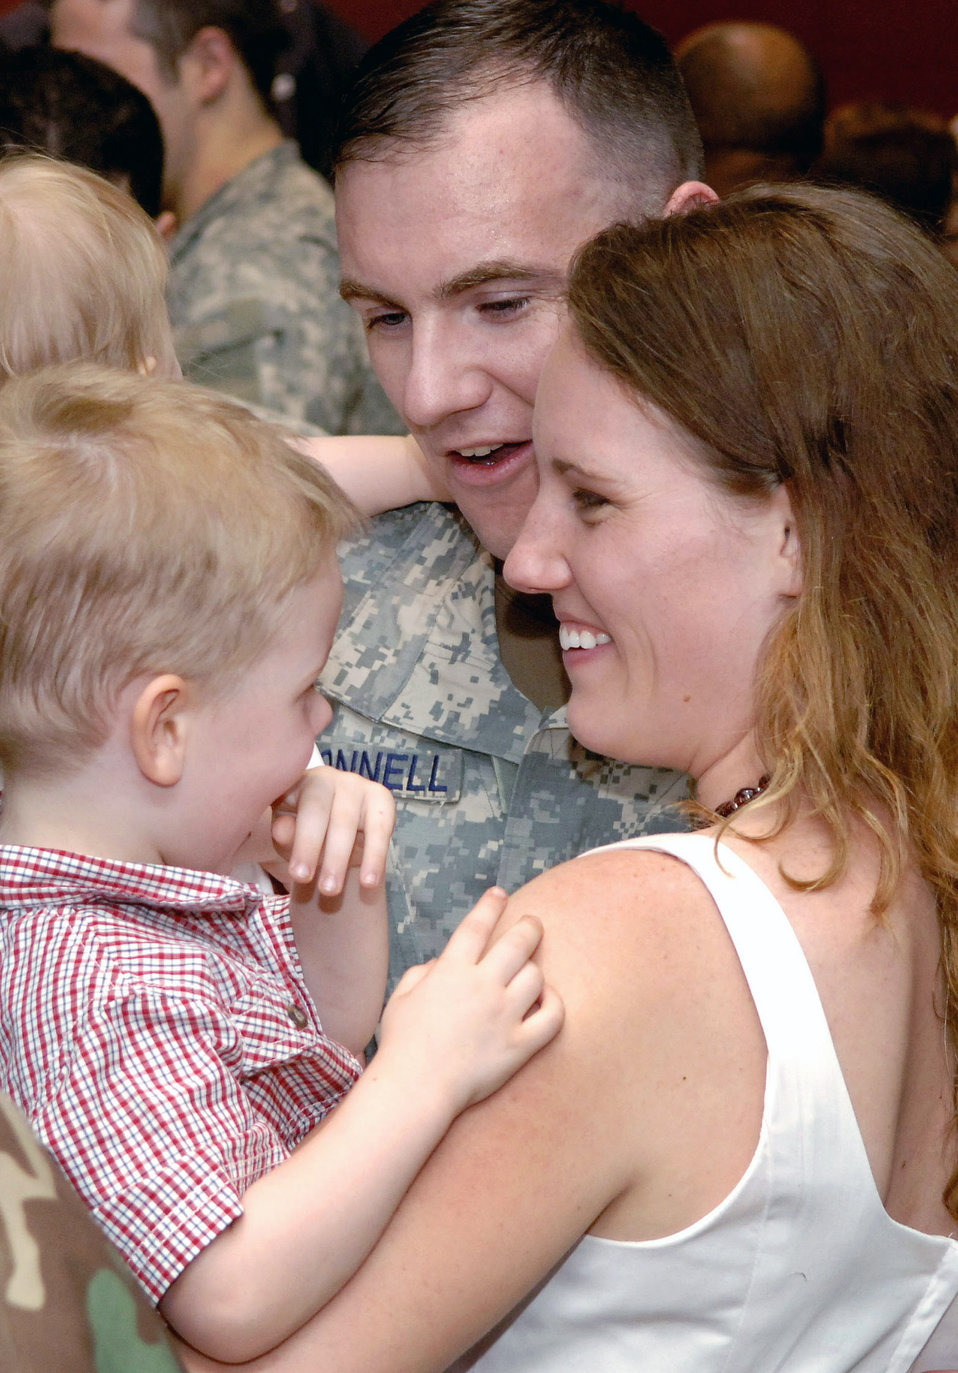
Program helps with reintegration

Airmen returning from a deployment usually find their permanent duty station a welcome sight. But they and their families may find that adjusting to life after deployment can be challenging. The Air Force has programs to help Airmen and their families deal with these changes and other aspects of their return.